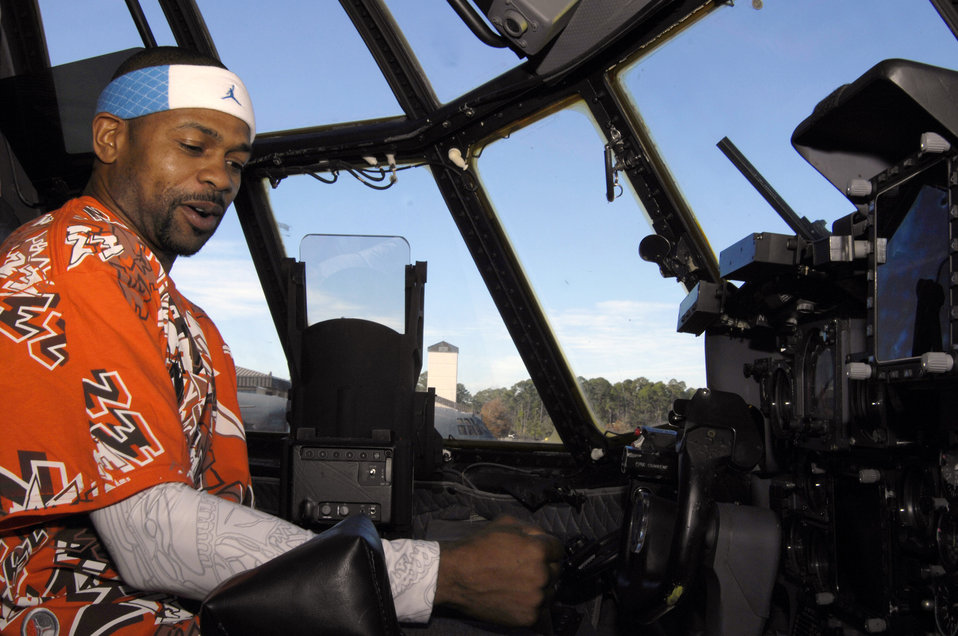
Boxing trio visits Hurlburt Field Airmen

Professional boxer Roy Jones Jr. sits in the cockpit of an AC-130U Spooky Gunship Dec. 5 at Hurlburt Field, Fla. Mr. Jones, boxer Felix Trinidad and promoter Don King visited Hurlburt Field as part of their tour of military installation to show support for military members.